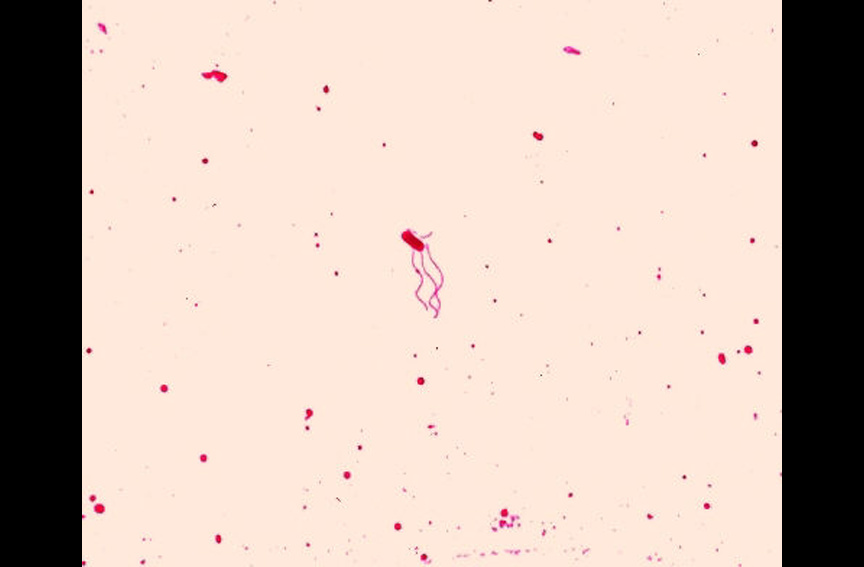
Clostridium tertium. Leifson flagella stain (digitally colorized).